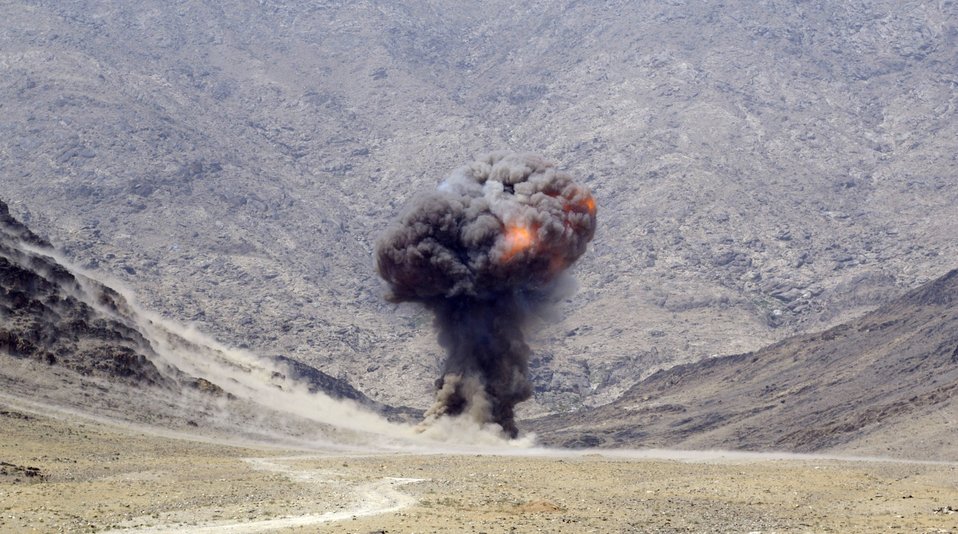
Small rewards program results in big explosion

A controlled detonation is conducted Sept. 1 near Forward Operating Base Mehtar Lam, Afghanistan. Nearly 900 pounds of small arms ammunition, rocket-propelled grenades and mortars were turned in by provincial citizens under the small arms for rewards program.